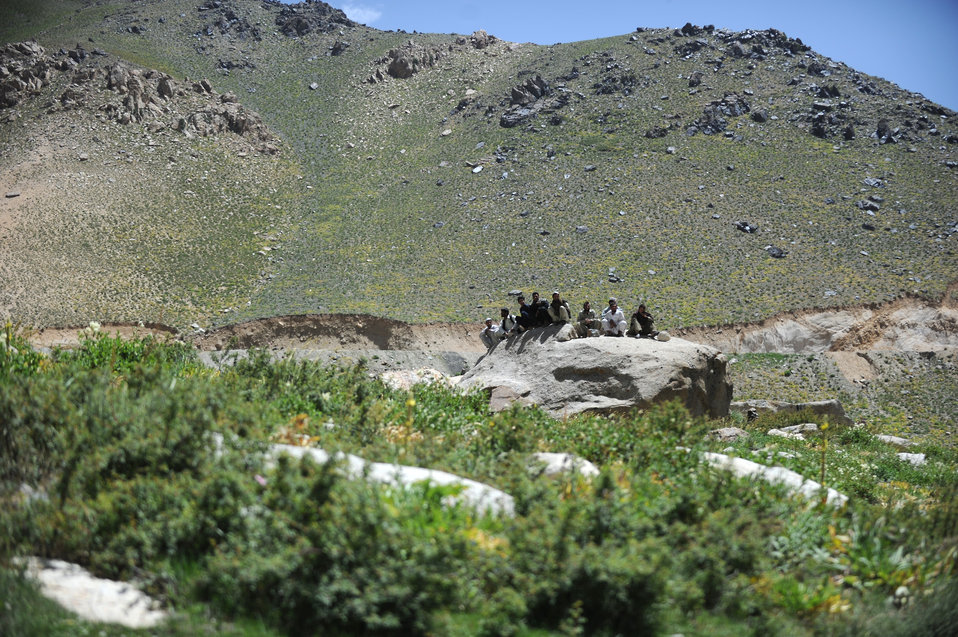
A group of Afghan men watch as diplomats arrive at the Salang Tunnel on the border of Parwan and Baghlan Provinces, Afghanistan, on Wednesday, June 15, 2011. (S.K.Vemmer/Department of State)